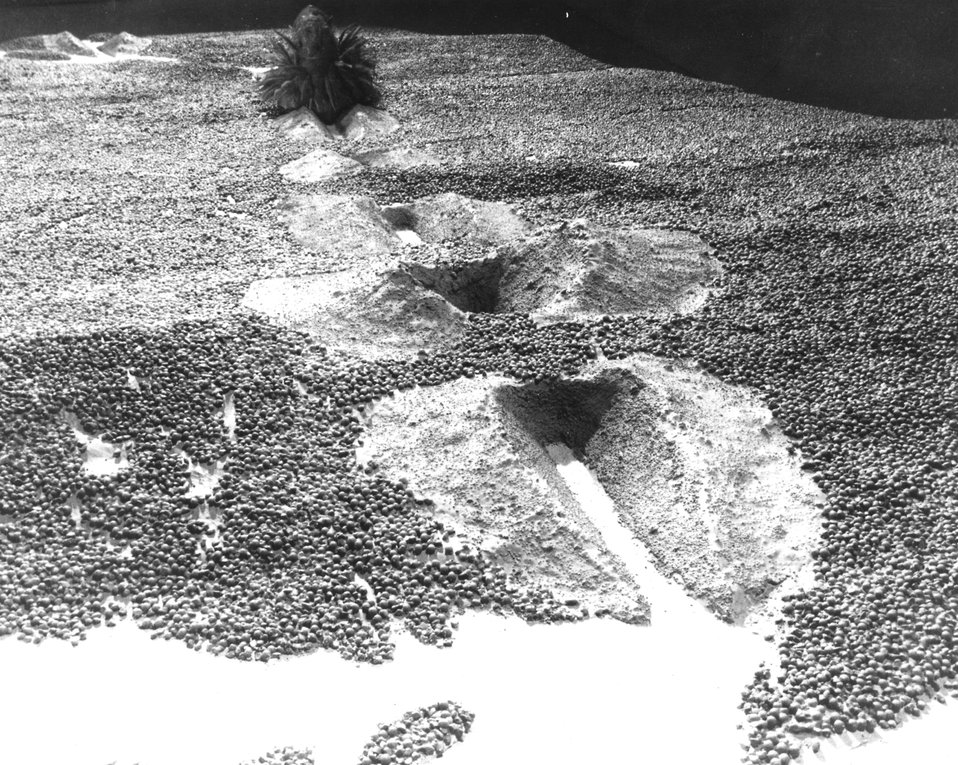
Photograph of a small scale model of the Sasardi-Morti route viewed from the east. c. 1964